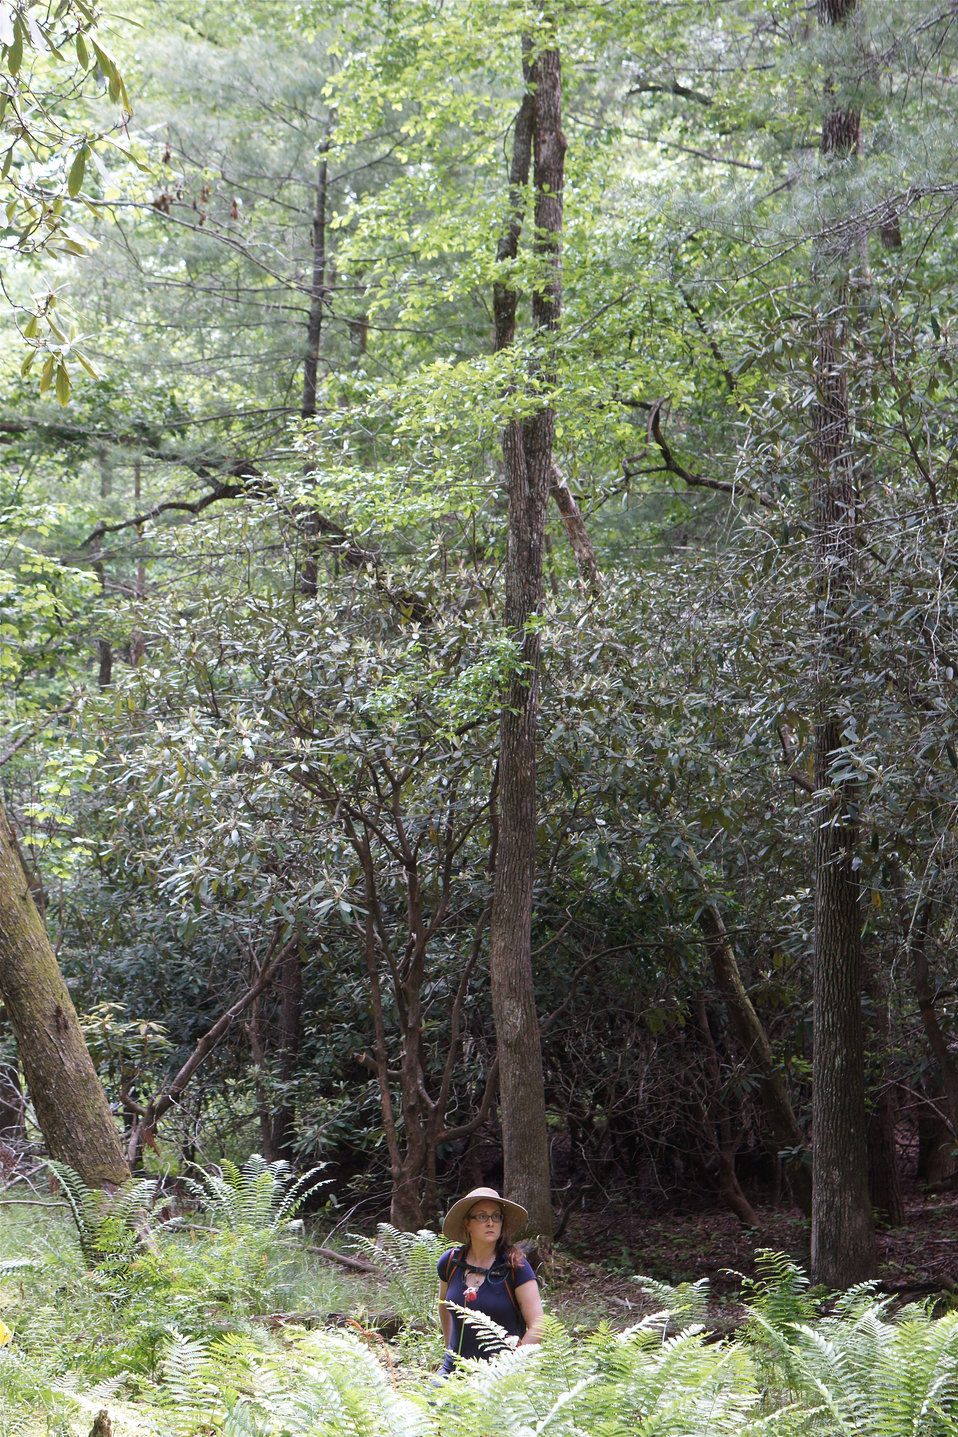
Carrie Brod resting in a bog

In May, bog conservationists from Tennessee, North Carolina, and Georgia convened in the north Georgia mountains for the spring, 2014 meeting of the Bog Learning Network. The event provided an opportunity for biologists to see, first hand, the result of management efforts at two north Georgia bogs. More importantly, the outings provided an opportunity to share innovative approaches to bog management, such as the role of the Georgia Plant Conservation Alliance in conserving rare plants and coordinating a cadre of volunteers to work on bog management.

The Bog Learning Network was convened in the winter of 2013 as a way to bring together people working for bog conservation across the Southern Appalachians. Southern Appalachian bogs are one of North America’s rarest habitats and home to many rare plants and animals.